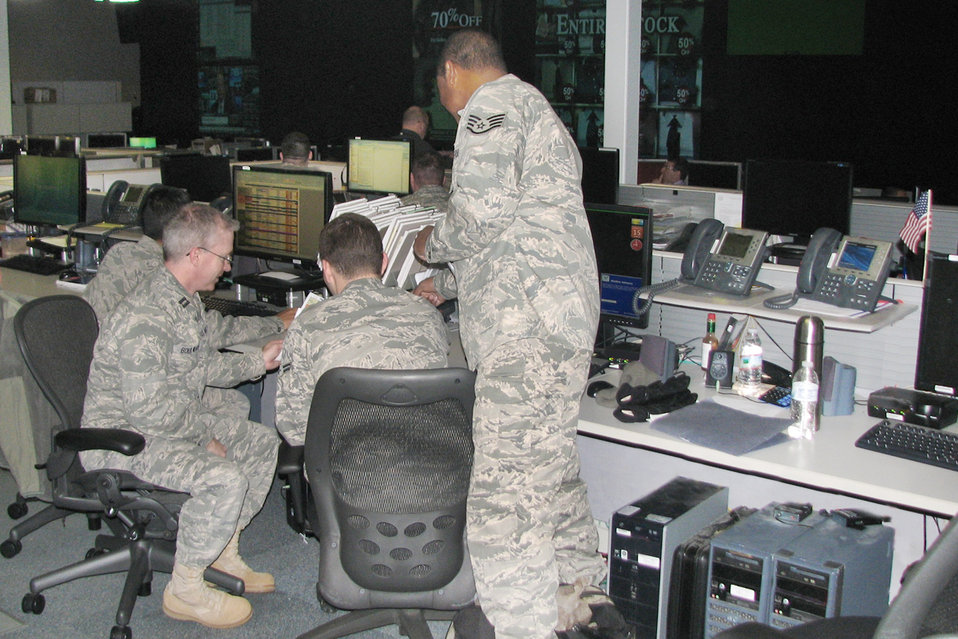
Operational ministry

Chaplain (Capt.) John Boulware reviews the wing operations center schedule with crewmembers before they begin their shift. The chaplain provides visible spiritual support to the Airmen. Chaplain Boulware is the 480th Intelligence, Surveillance and Reconnaissance Wing chaplain at Langley Air Force Base, Va.